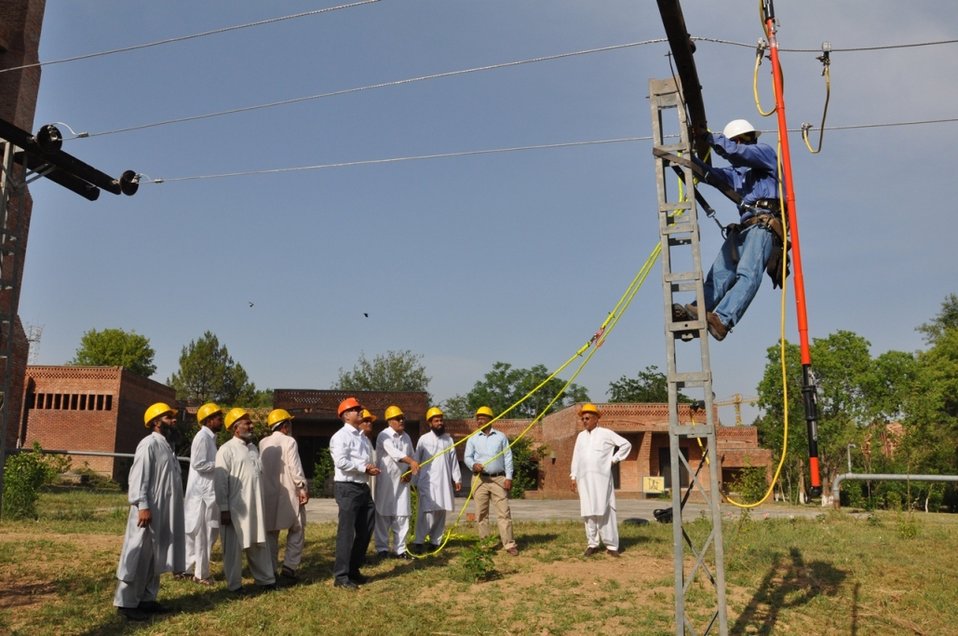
Quick Impact Safety Training Program at Wapda Staff College

Islamabad, May 21, 2012: The United States Government through the United States Agency for International Development (USAID) “Quick Impact Lineman Training Program” will help in save thousands of linemen in Pakistan. At the concluding session of today’s training program held at the WAPDA Staff College, the deputy chief of party of USAID’s Power Distribution Program officially handed over linemen safety tools to distribution companies including the Islamabad Electric Supply Company (IESCO), Multan Electric Power Company (MEPCO), and Hyderabad Electric Supply Company (HESCO). USAID has provided safety trainings to over 415 linemen and will provide training to thousands more in the coming months.